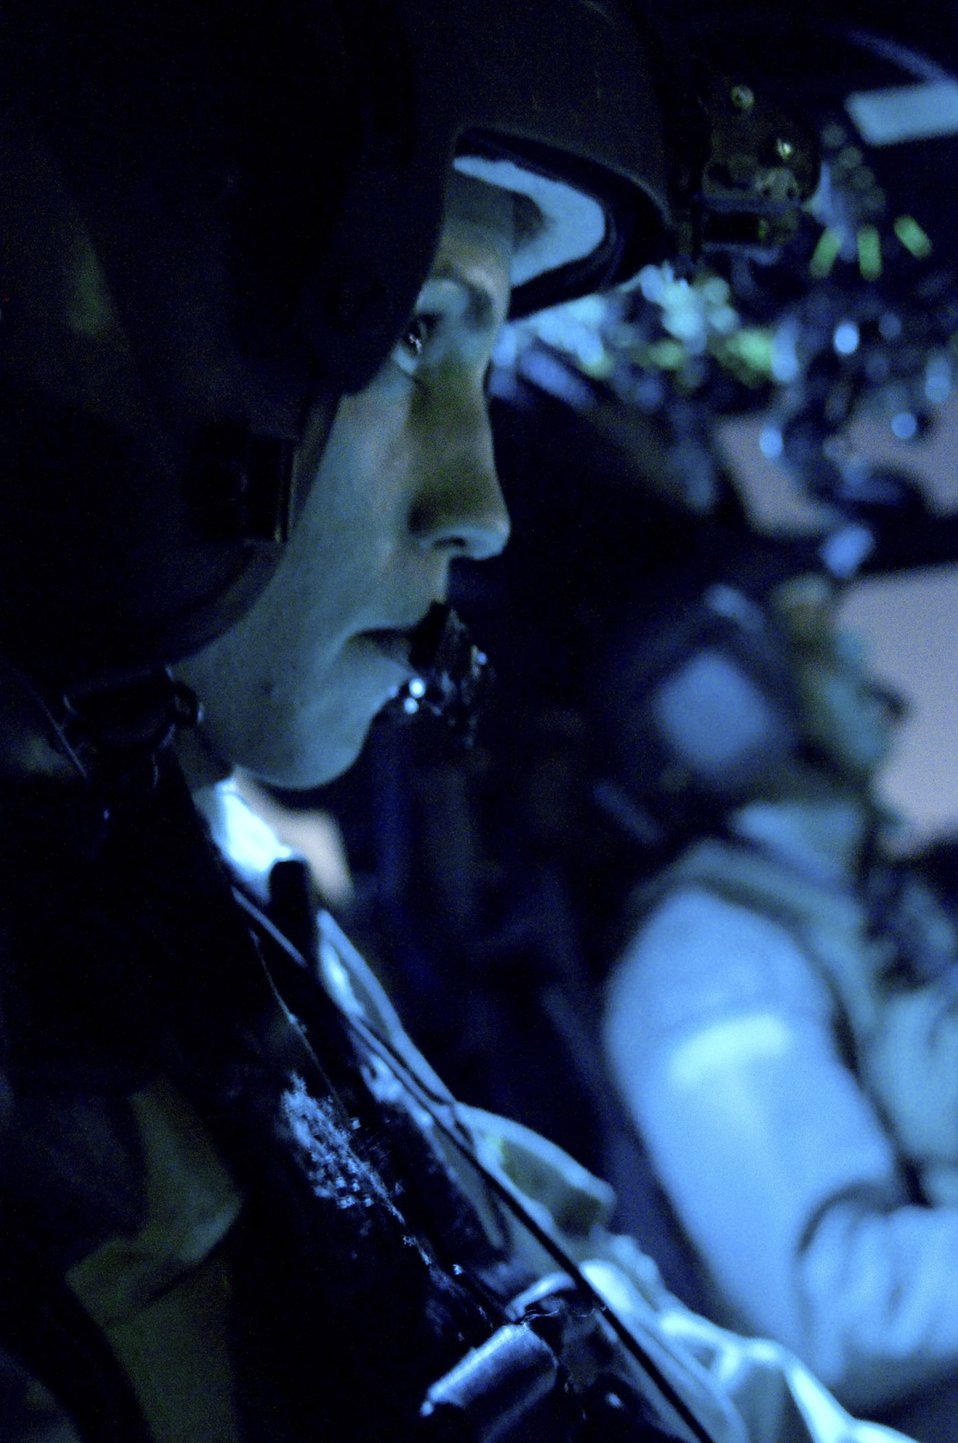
Nighttime operations

Capt. Jennifer Aupke checks her instruments July 17 at Bagram Air Base, Afghanistan. Captain Aupke flew a combat search and rescue exercise that night. Captain Aupke is an aircraft commander and flight lead for the 33rd Expeditionary Rescue Squadron deployed from Kadena AB, Japan.